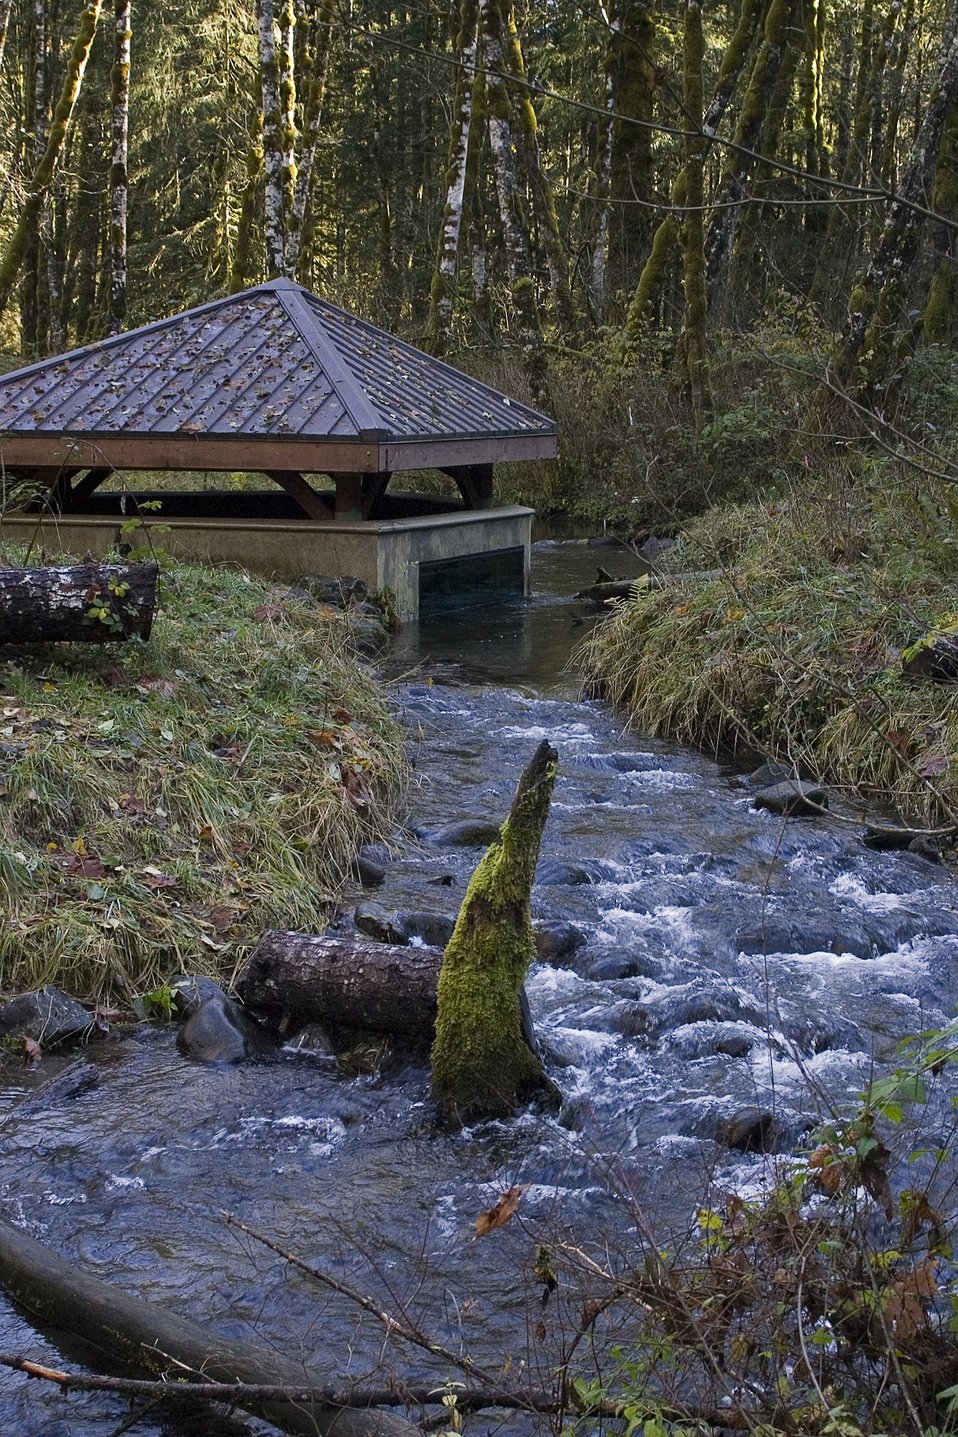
This structure at Wildwood Rrecreation Area near Mt. Hood lets visitors look below the surface of the creek water to observe fish and other aquatic life